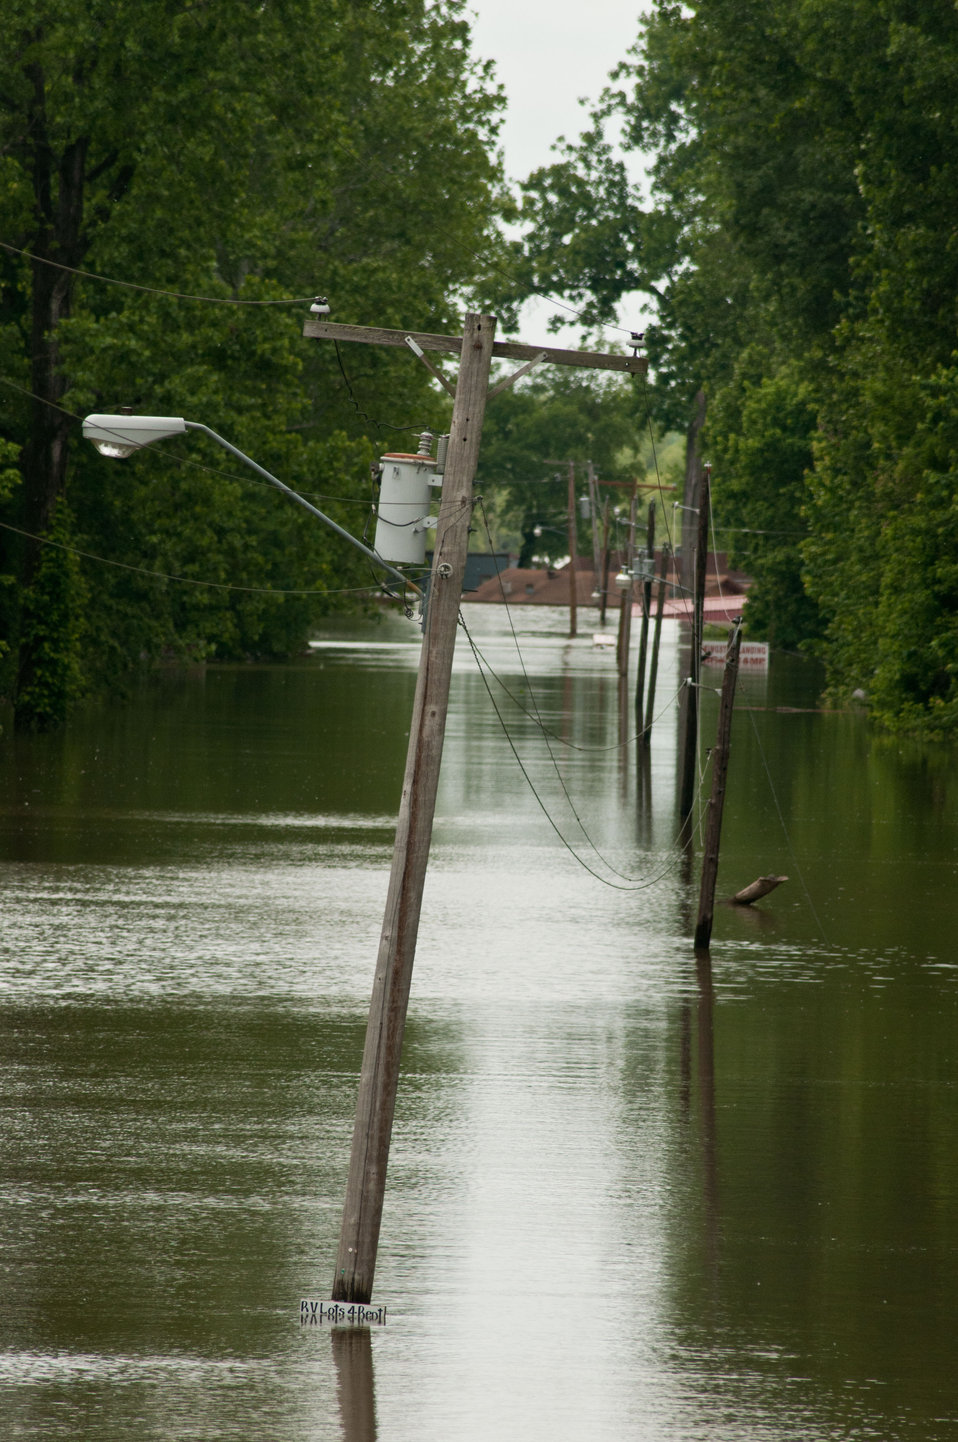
Floods waters from Mississippi River inundated Tunica Cutout, MS on Sunday, May 15. 2011. The entire population was relocated nearby to the protected side of the levee.